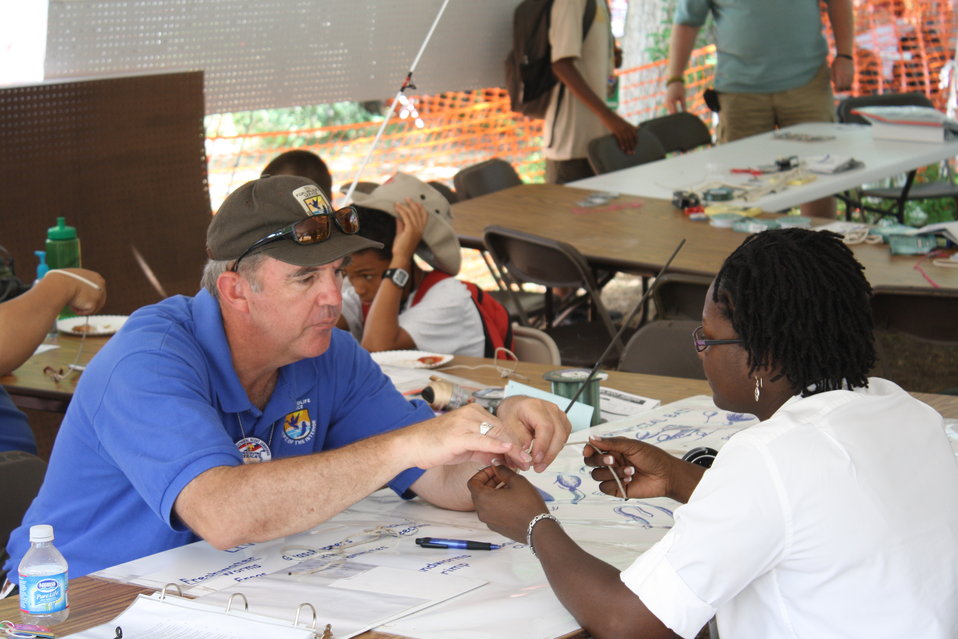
Boy Scout Jamboree 2010